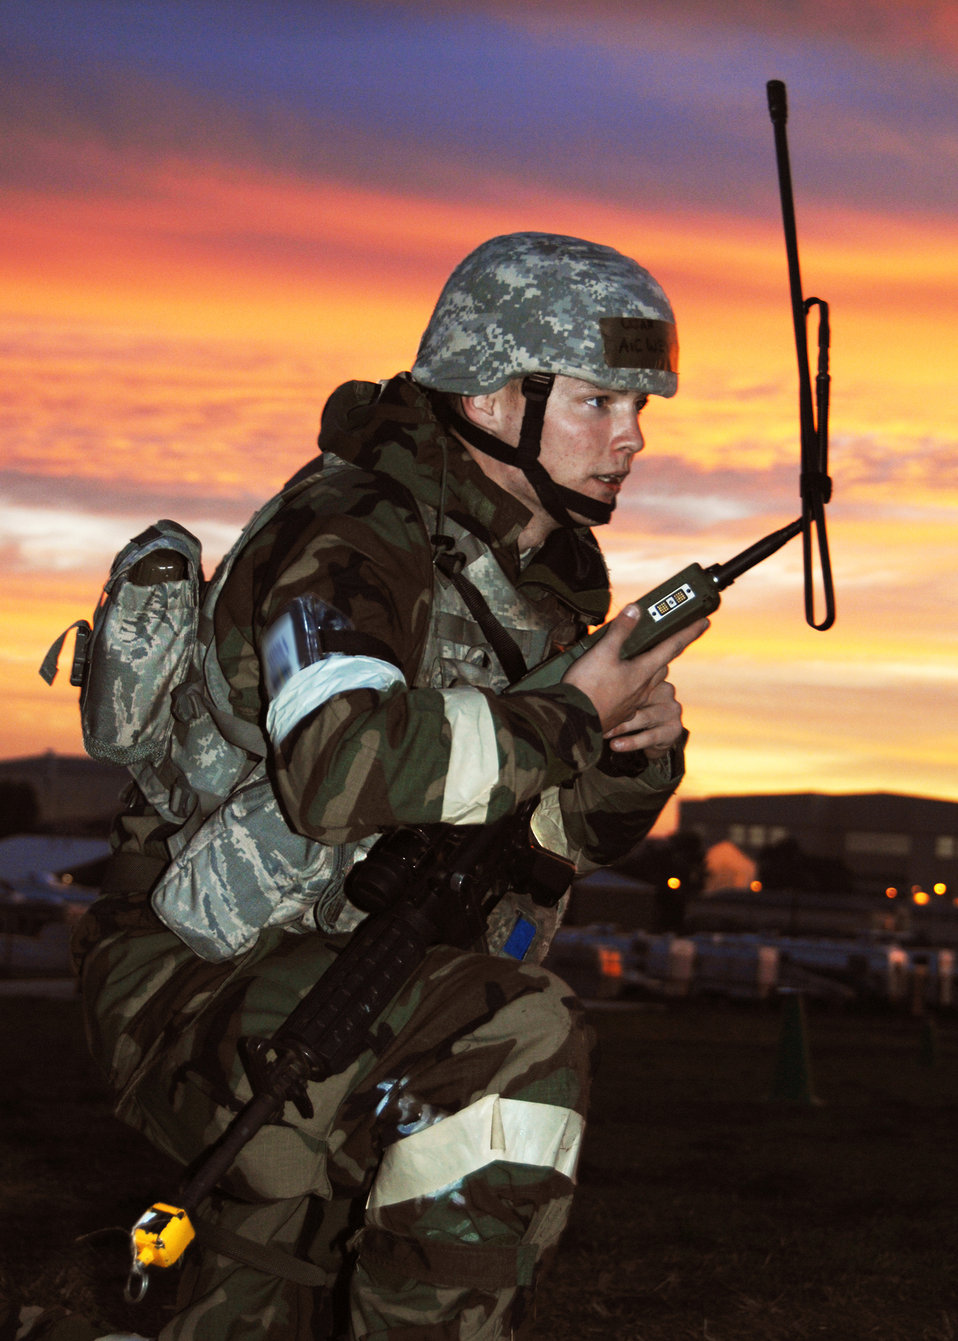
I'm here, where are you?

During an operational readiness exercise at Travis Air Force Base, Calif., Airman 1st Class Christopher Webb communicates with other security personnel using a line-of-site radio. Airman Webb is a member of the 60th Security Forces Squadron.